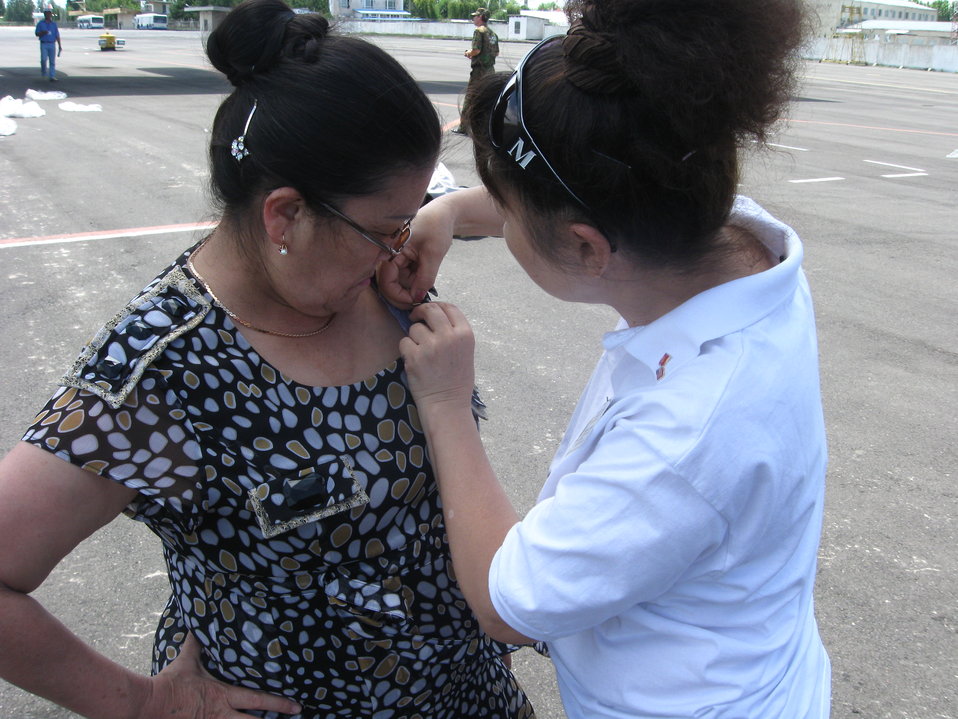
Bibira Akmoldoeva Helps Valentina Akimova of the Kyrgyz Republic Ministry of Health Put on a Flag Pin

Bibira Akmoldoeva, Counterpart’s country director for Kyrgyzstan, helps Valentina Akimova of the Kyrgyz Republic Ministry of Health put on a flag pin in Osh, Kyrgyzstan, on June 26, 2010.